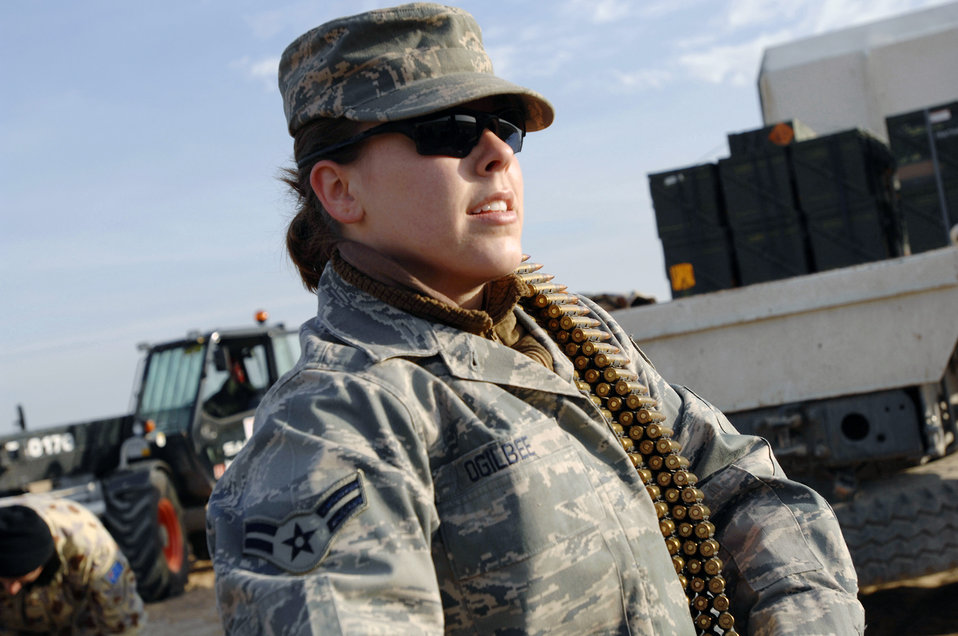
U.S. Air Force, Australian EOD have a blast

Airman 1st Class Jessica Ogilbee handles ammunition set to be destroyed during a controlled detonation Jan. 18 at an explosive ordnance disposal range in Southwest Asia. The controlled detonation was done in conjunction with coalition forces from the Australian Army Force Level Logistic Asset unit to destroy unserviceable munitions. Airman Ogilbee is with the 386th Expeditionary Civil Engineer Squadron Explosive Ordnance Disposal Flight.